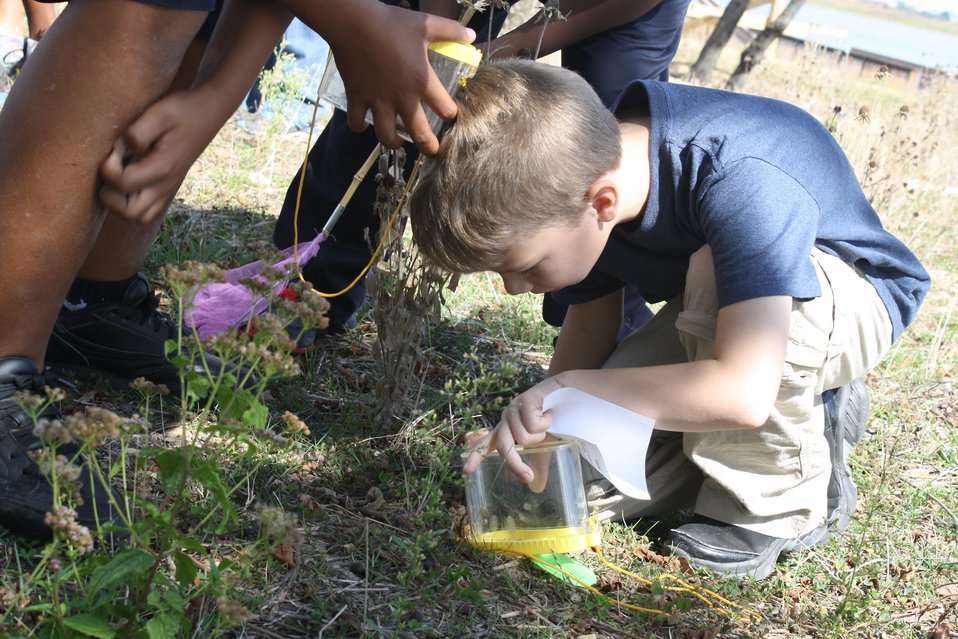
School students

Students at Curtis Bay Elementary School participate in environmental education programs at Masonville Cove led by the Living Classrooms Foundation.